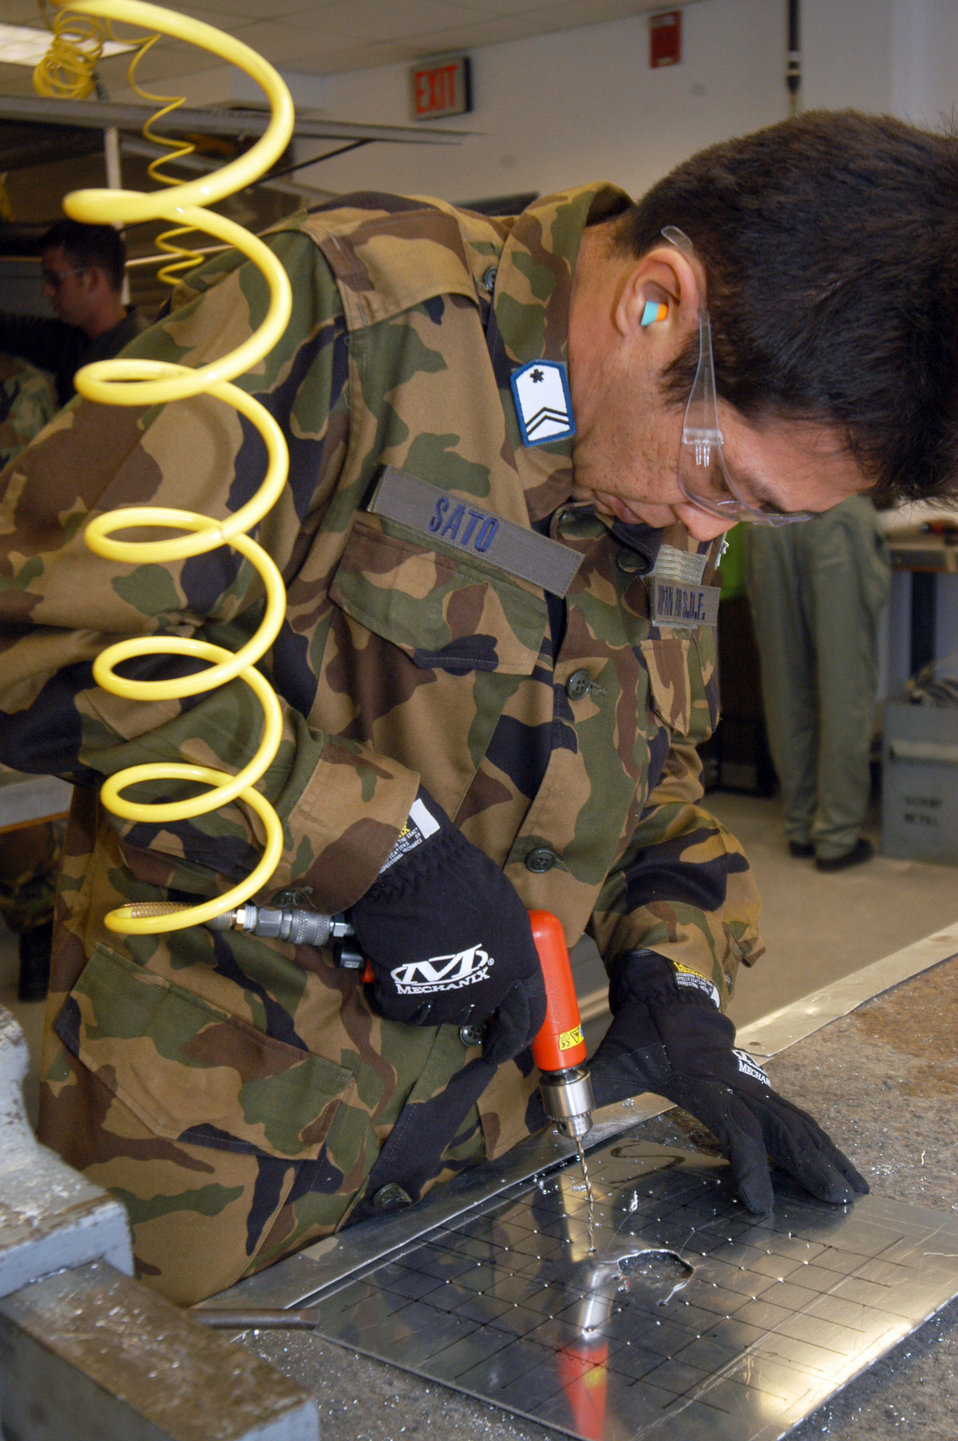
JASDF personnel learn aircraft battle damage repair

Tech. Sgt. Tatsuya Sato drills rivet holes in a piece of sheet metal with simulated battle damage Feb. 14 so a patch can be attached. Five members of the Japan Air Self-Defense Force visited Robins Air Force Base, Ga., to improve their battle-damage repair skills.